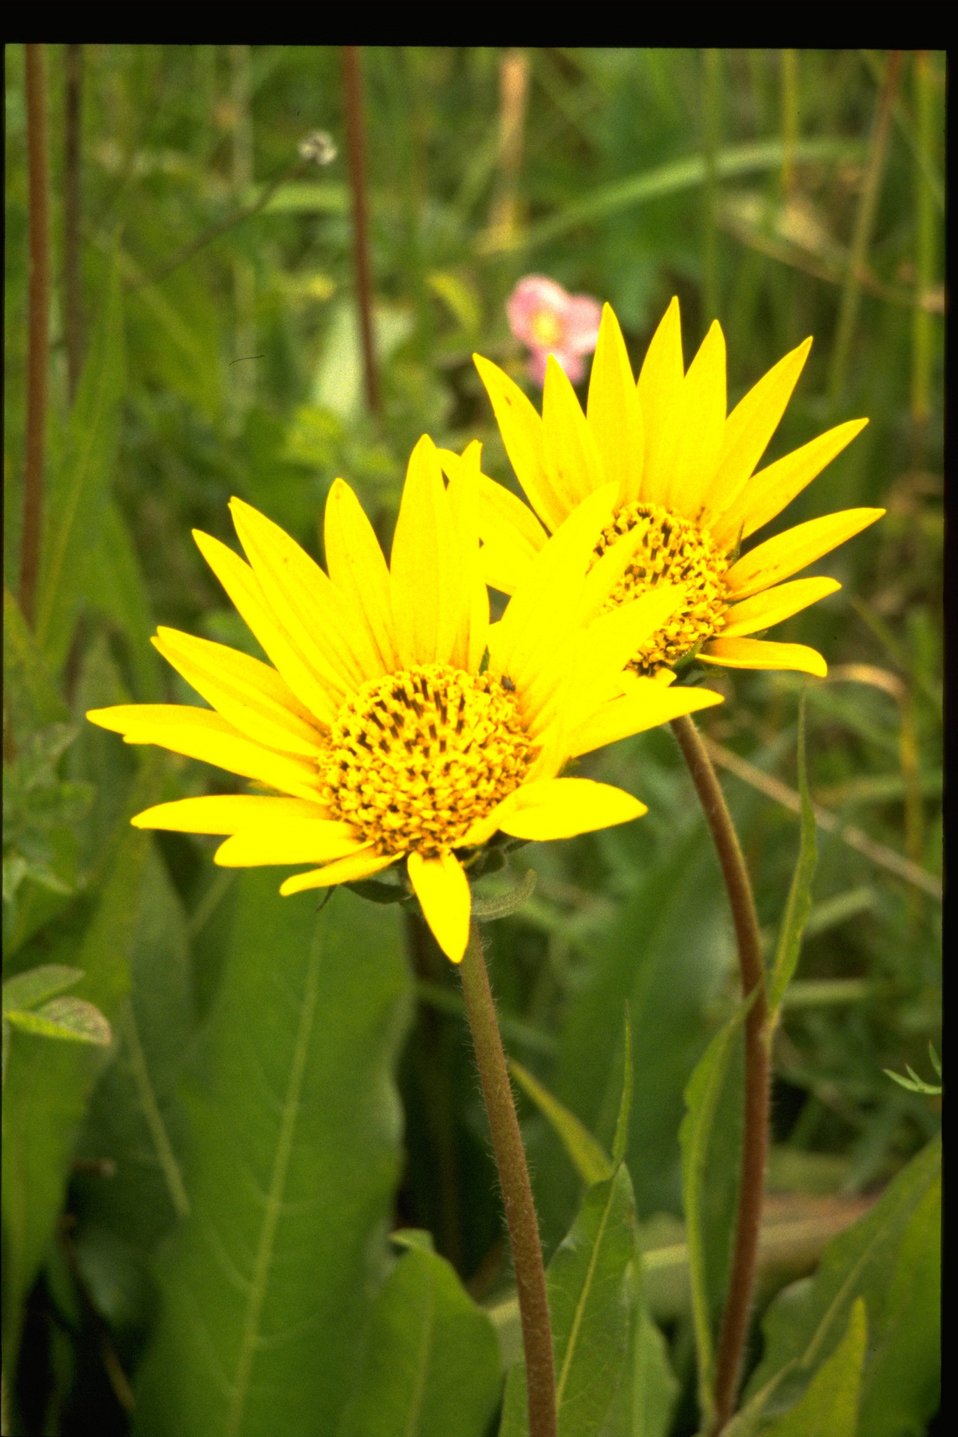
Medium shot of Narrowleaf Mule Ears, Wyethia angustifolia.